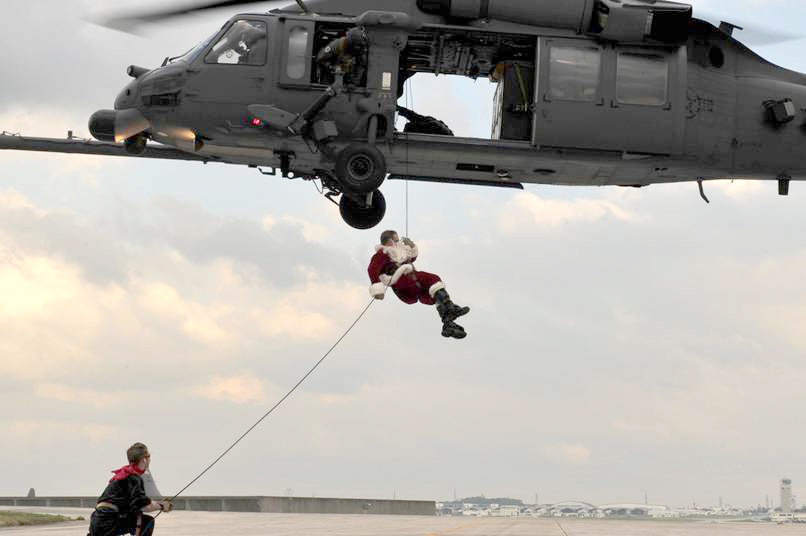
Santa to the rescue

Santa Claus, with an assist from one of his elves, rappels from an HH-60 Pave Hawk Dec. 17, 2010, to greet children of the 31st and 33rd Rescue Squadrons at Kadena Air Base, Japan. Santa wasn't the only attraction at this year's squadron celebration. There were games, cake decorating and other events.